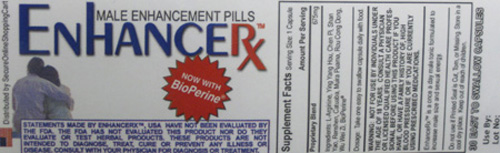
RECALLED – Dietary Supplement

December 13, 2013 – Product Recall – Stone Independent Research, Inc. Issues Allergy Alert on Undeclared Milk in EnhanceRx Dietary Supplement.